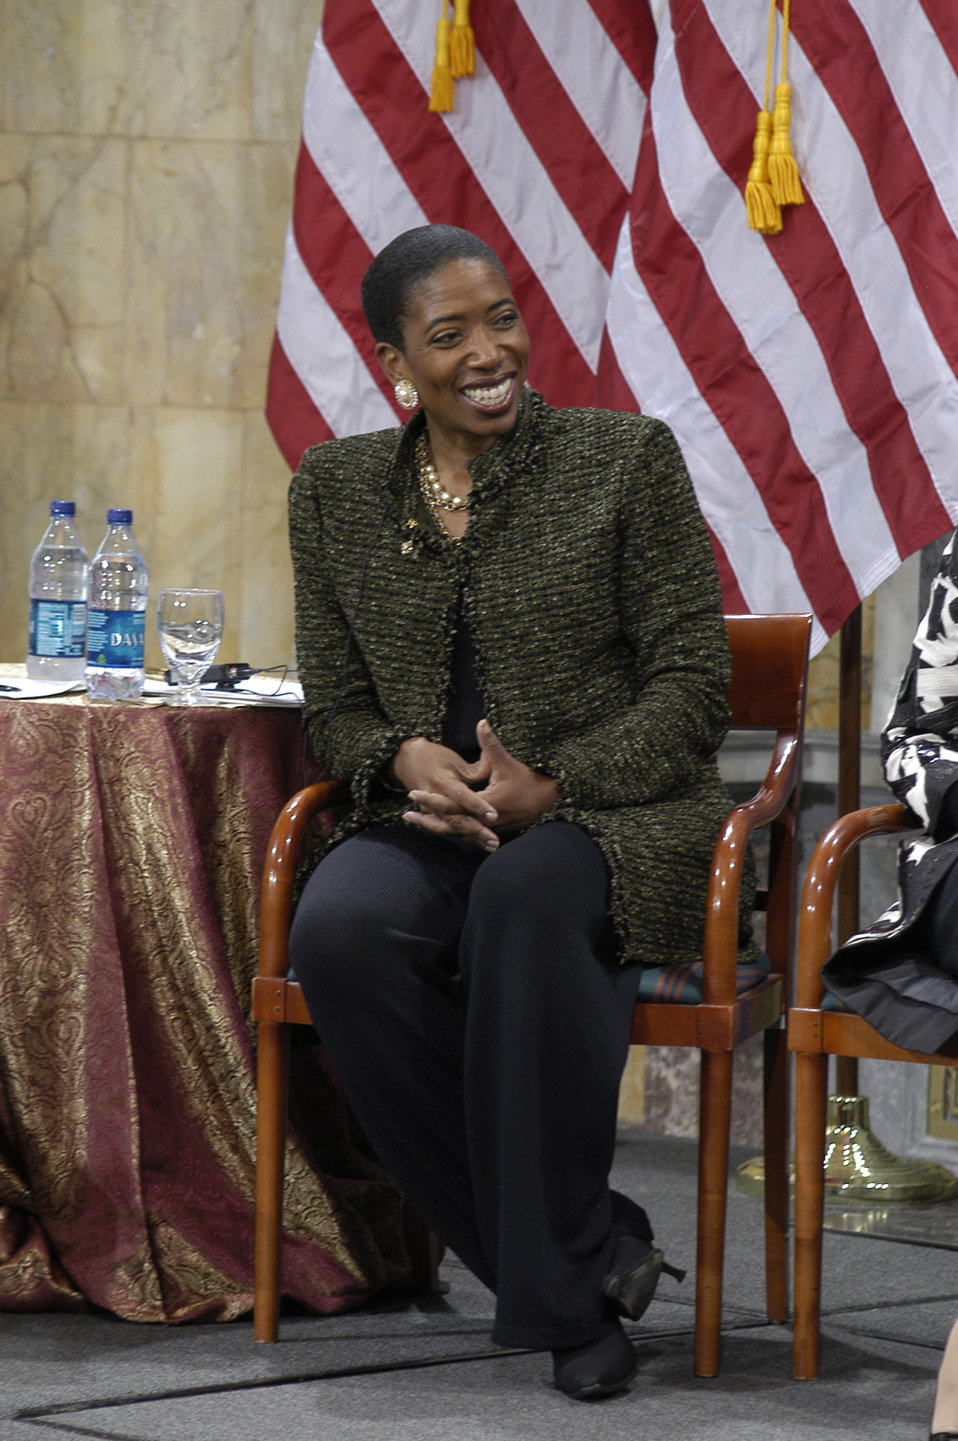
Women in Finance Symposium, 03/29/2010

Director in the Strategic Client Group of Morgan Stanley Carla A. Harris at the Women in Finance Symposium at Treasury on March 29, 2010.